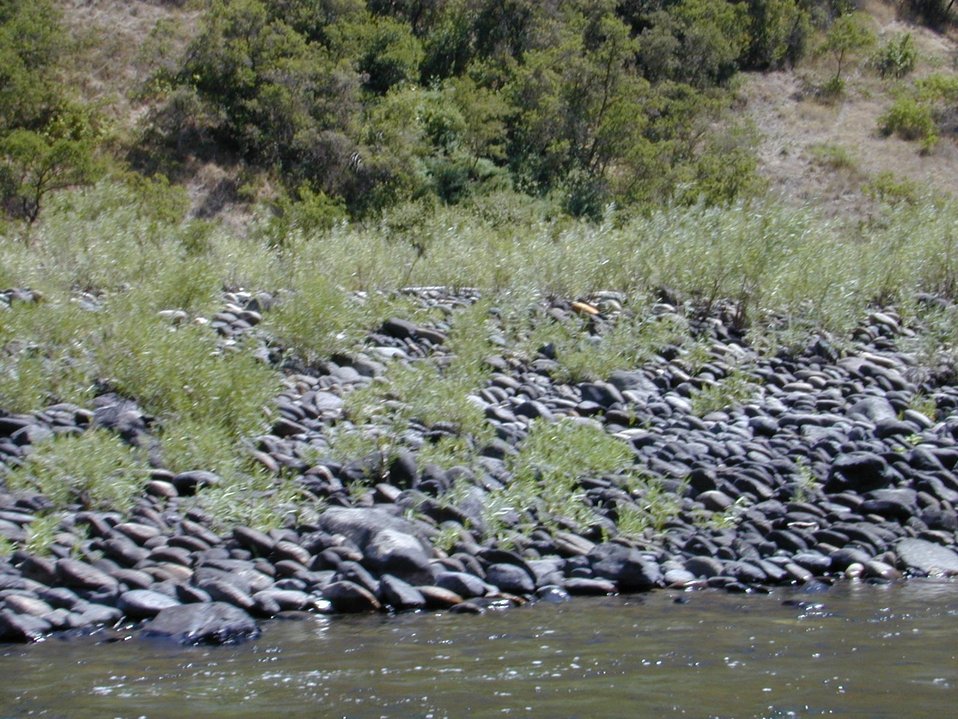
Rock imbrication along the Lower Salmon River Cottonwood Field Office UCSC Upper Columbia Salmon Clearwater District